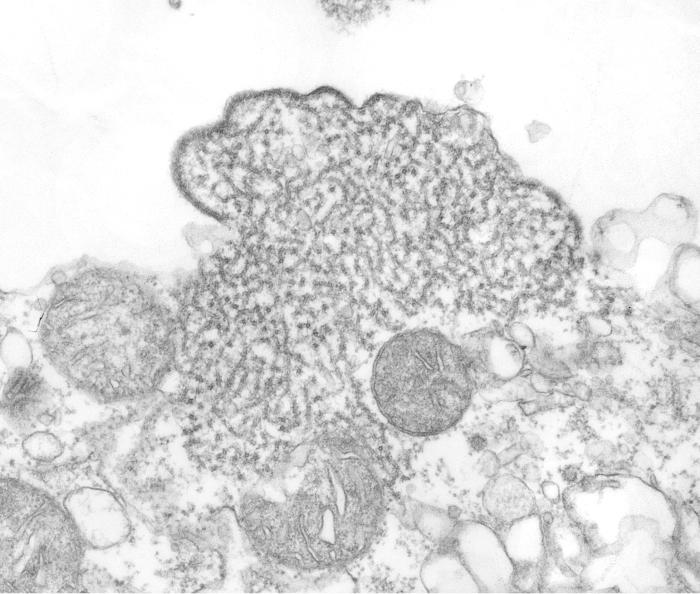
This transmission electron micrograph (TEM) depicted a number of Nipah virus virions that had been isolated from a patient's cerebrospinal fluid (CSF) specimen.Nipah virus is a member of the family Paramyxoviridae, and is related, but not identical to Hendra virus. Nipah virus was initially isolated in 1999 upon examining samples from an outbreak of encephalitis and respiratory illness among adult men in Malaysia and Singapore.Hendra virus, formerly called equine morbillivirus, is also a member of the family Paramyxoviridae. The virus was first isolated in 1994 from specimens obtained during an outbreak of respiratory and neurologic disease in horses and humans in Hendra, a suburb of Brisbane, Australia.